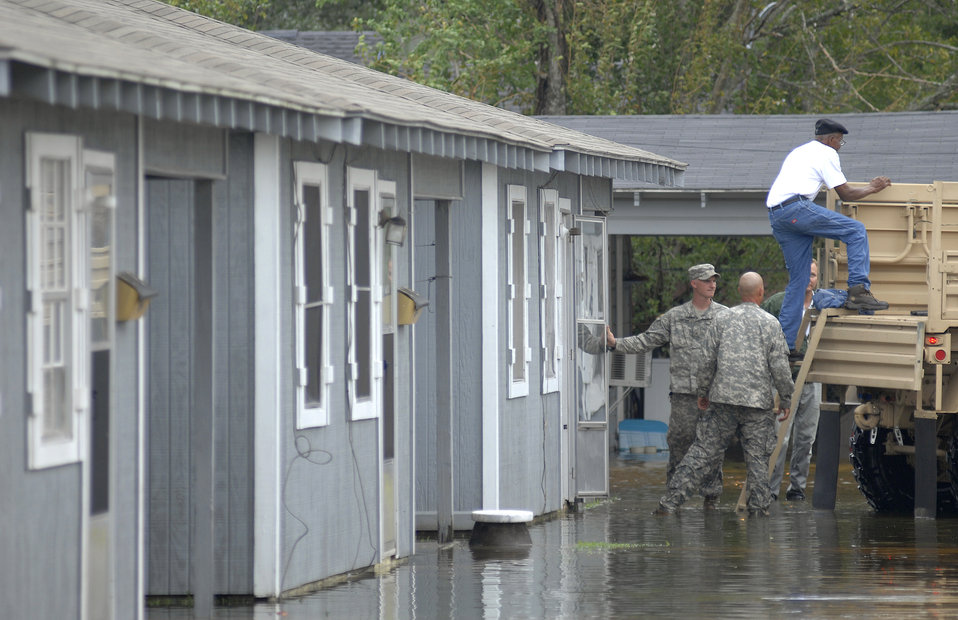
Watchful Eye

Army Sgt. Josoph Simpson (left) and Sgt. Jerry Caylor rescue Mr. A.B. Monroe from his flood damaged home during a high-water rescue mission in Lake Charles, La., after Hurricane Ike Sept. 13. Sgt. Simpson and Sgt. Caylor are assigned to Bravo Company, 3rd Battalion, 156th Infantry of the Louisiana Army National Guard.